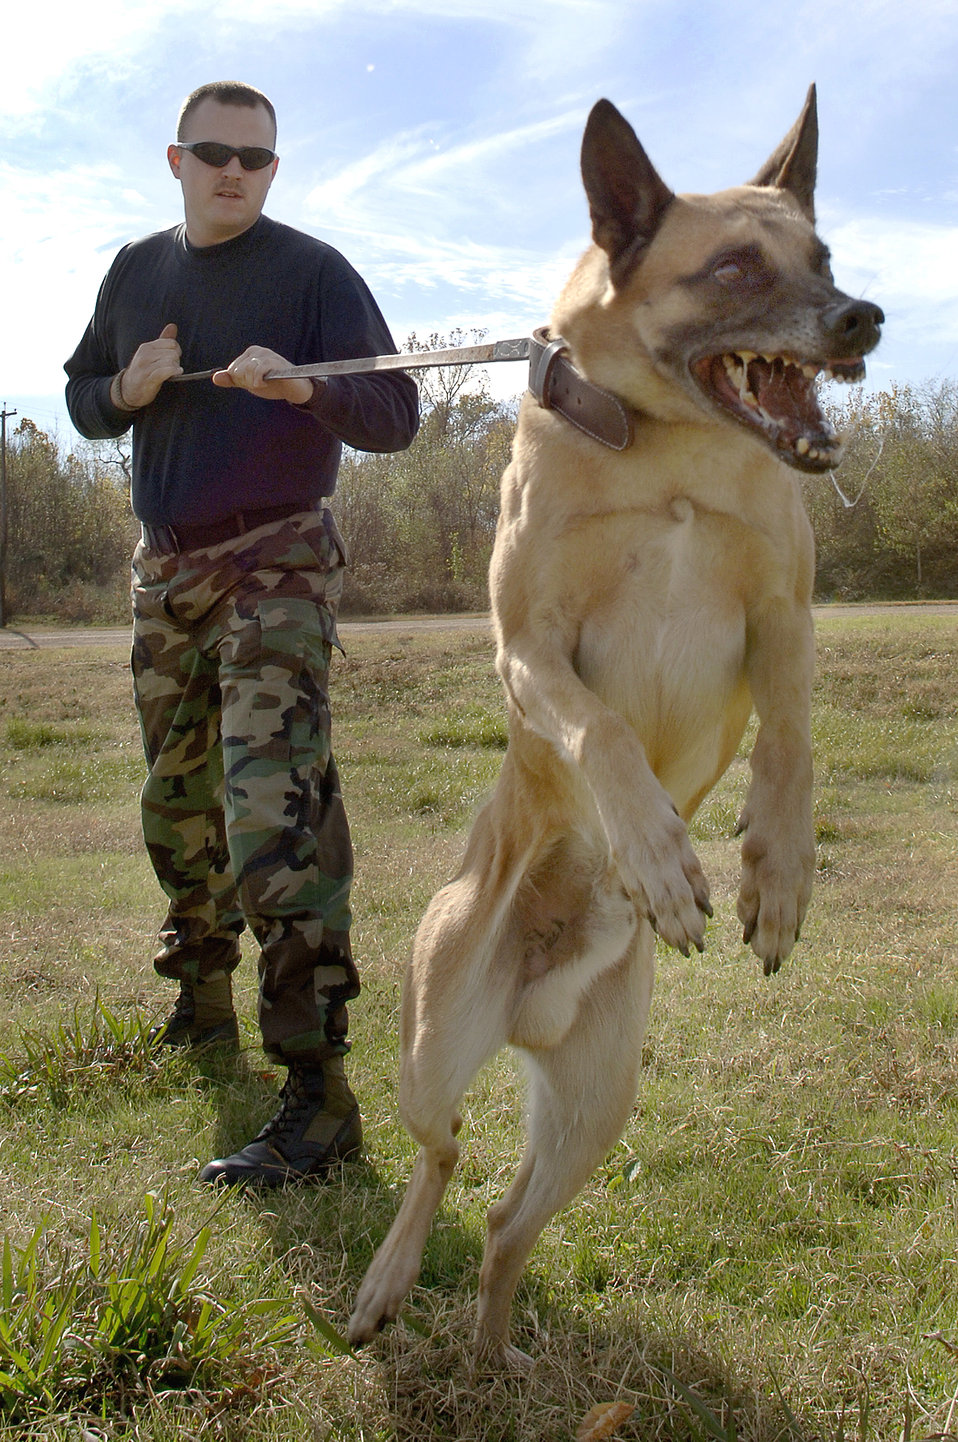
Combat skills training

BARKSDALE AFB, La. (AFPN) -- Staff Sgt. Kristopher Russ and his military working dog, Rouge, participate in the expeditionary combat skills training course. The dogs were integrated to provide a more realistic patrolling experience. Sergeant Russ and Rouge are both with the 2nd Security Forces Squadron.